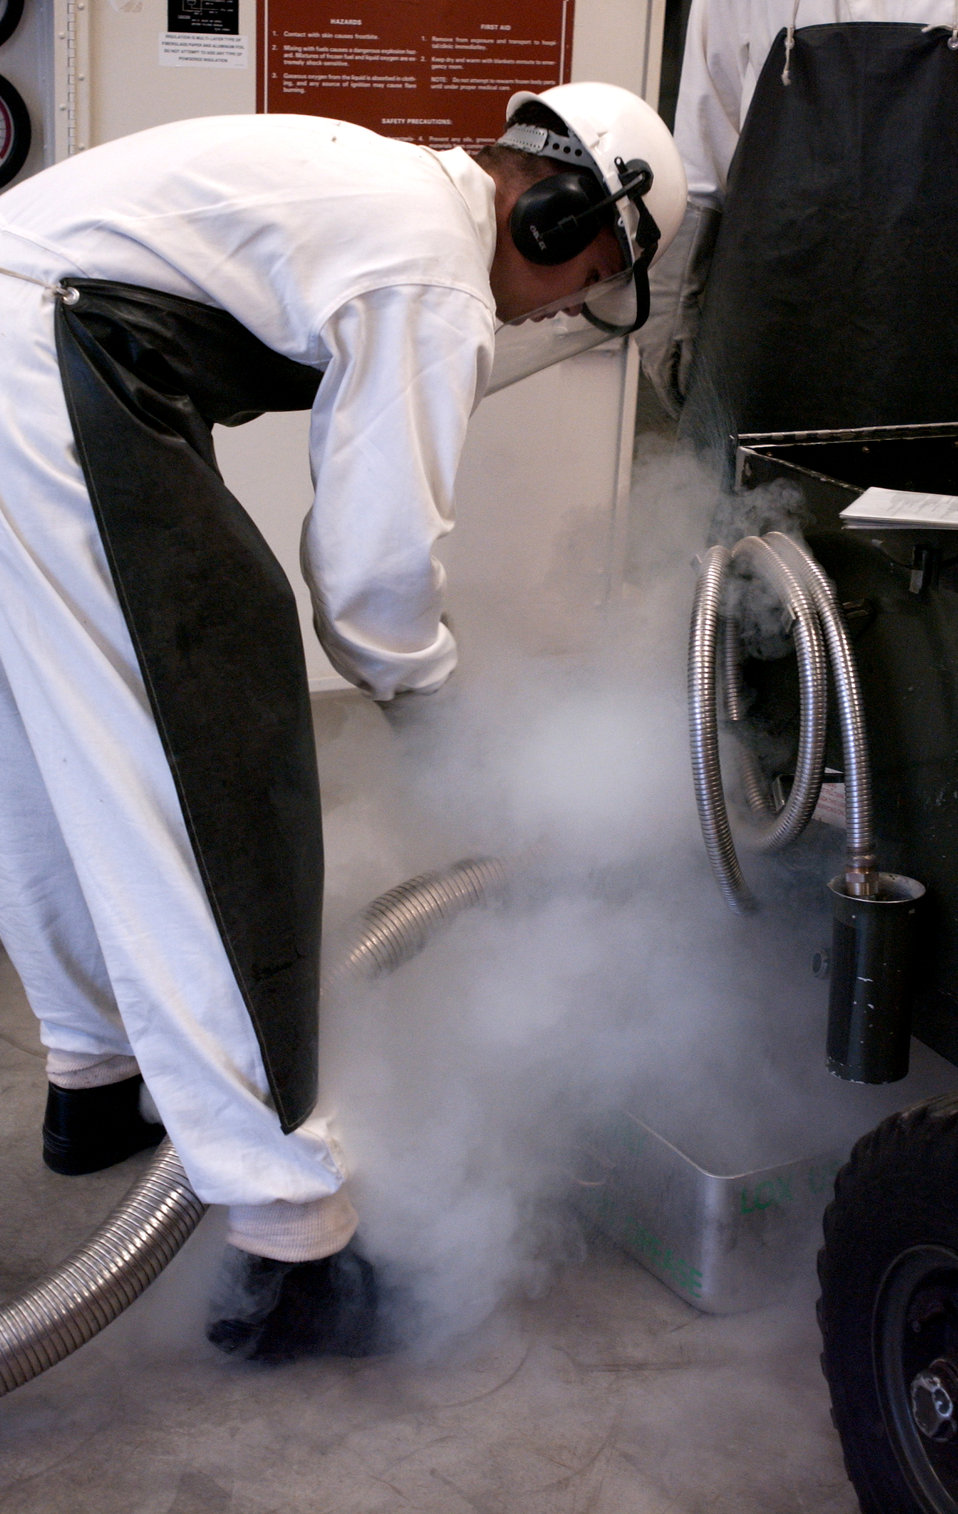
LOX

AVIANO AIR BASE, Italy -- Senior Airman Travis Miller services a liquid oxygen cart here Oct. 5. Airman Miller is a cryogenics technicians assigned with the 31st Logistics Readiness Squadron.